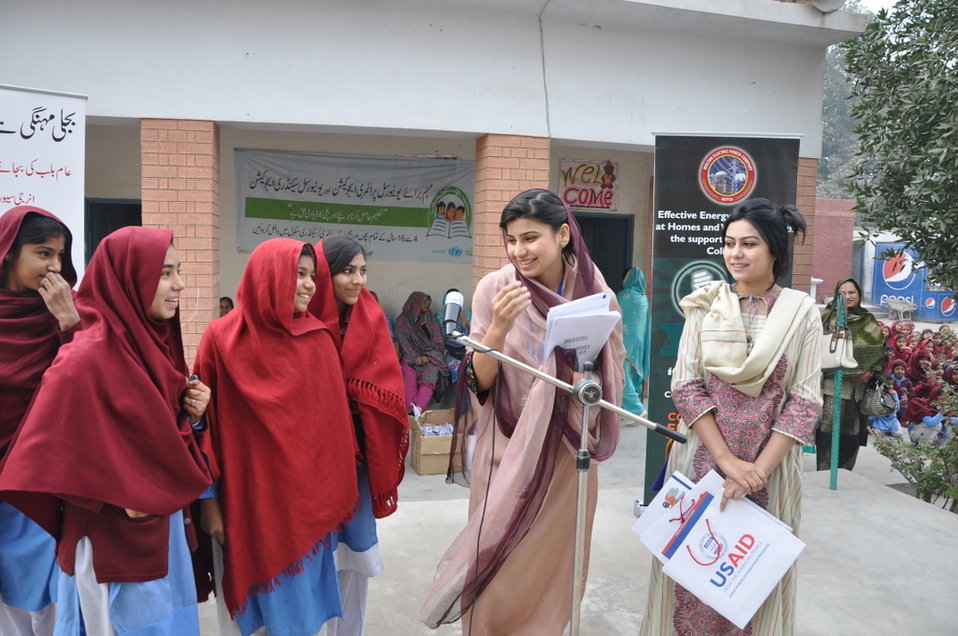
USAID Power Distribution Program-Energy Conservation Seminar at Govt.Girls High School Chah Bohar Wala, Multan

Multan, January 30, 2013 - the USAID Power Distribution Program with the collaboration of MEPCO, held an Energy Conservation Seminar at Govt.Girls High School, Chah Bohar Wala Multan. More than 2000 students attended the seminar & excitedly participated in the in quiz session.